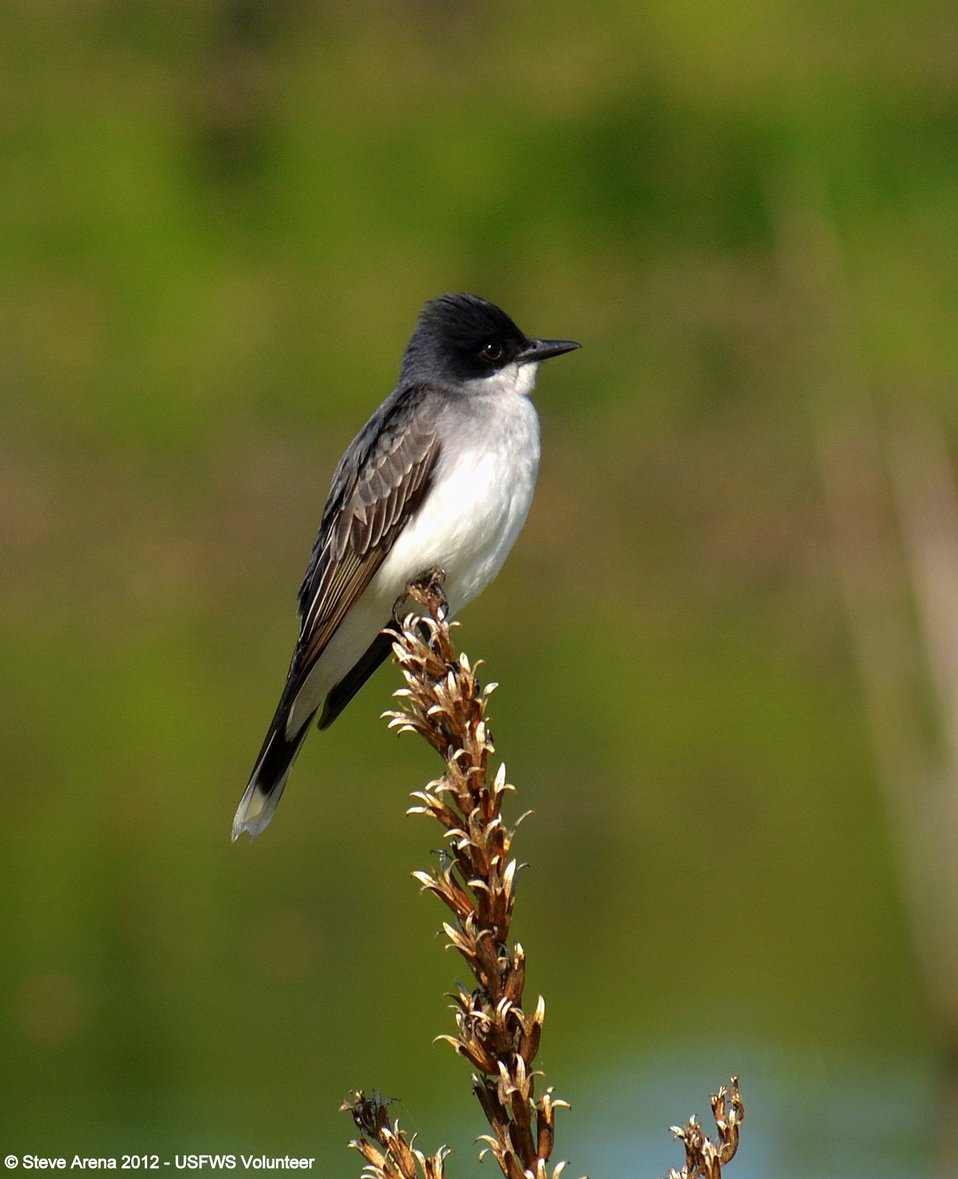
Eastern Kingbird (Tyrannus tyrannus) Great Meadows NWR, Concord, MA

Eastern Kingbird Great Meadows NWR, Concord, MA

Credit: Steve Arena/USFWS

18 May 2012